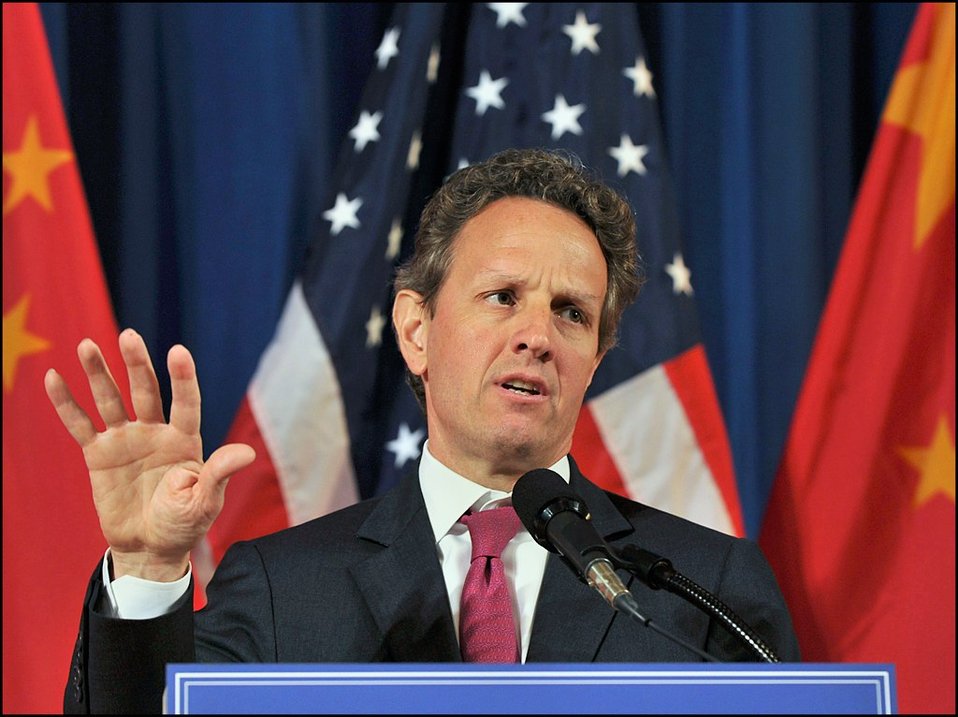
U.S.-China Strategic and Economic Dialogue

Secretary Geithner answers questions from the press after the conclusion of the U.S.-China Strategic and Economic Dialogue.